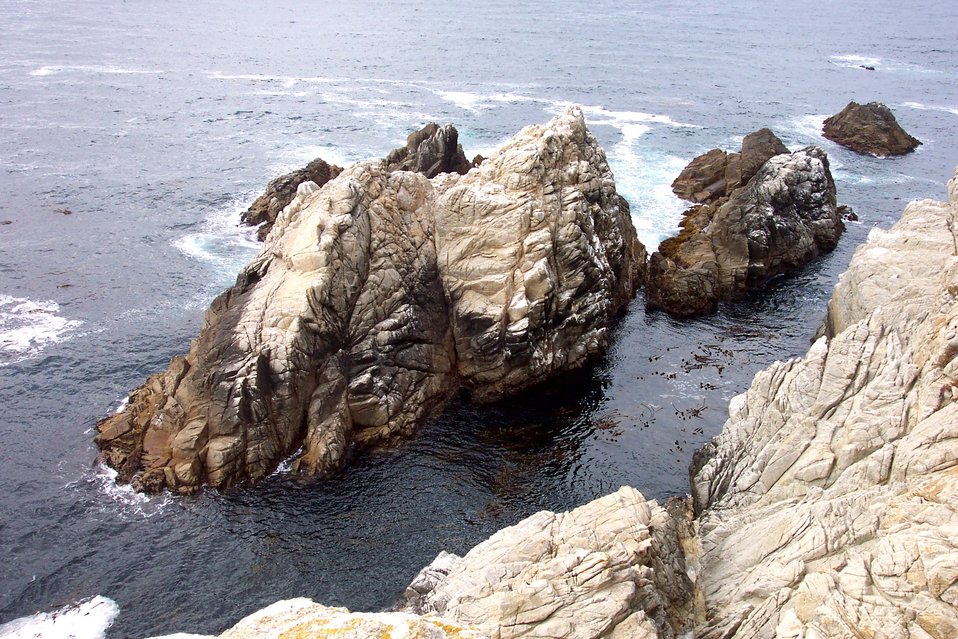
An islet of Santa Lucia Granodiorite, an erosion-resistant rock that underlies most of the Point Lobos area.